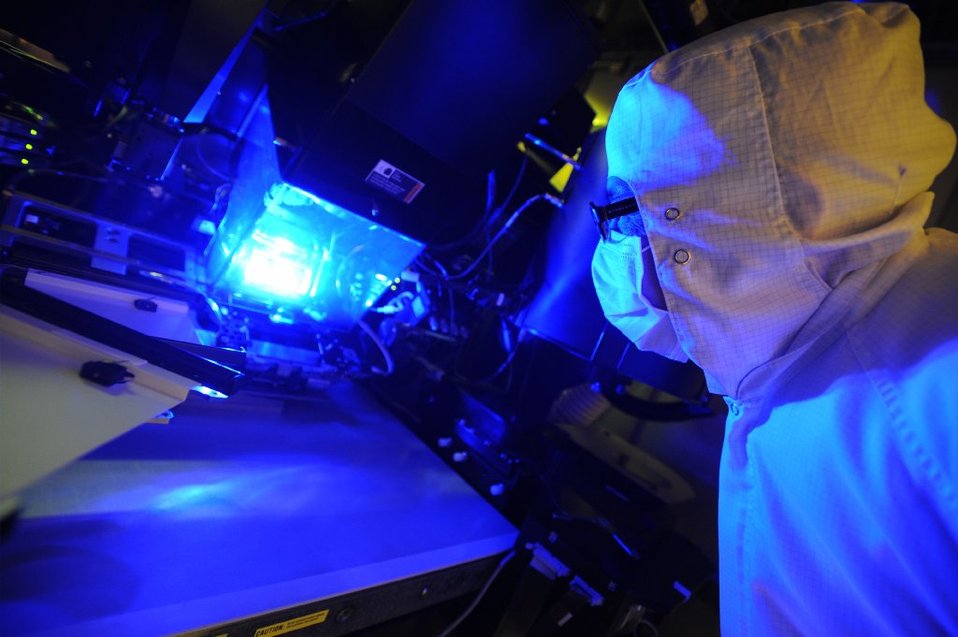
Solar Innovation

Solar Junction, in partnership with NREL, has developed solar cells that reach a record-breaking 44 percent efficiency -- meaning that more than 40 percent of the sunlight the solar cells are exposed to is converted into electrical energy. In this photo, an operator inspects a photolithography tool used to manufacture these solar cells.